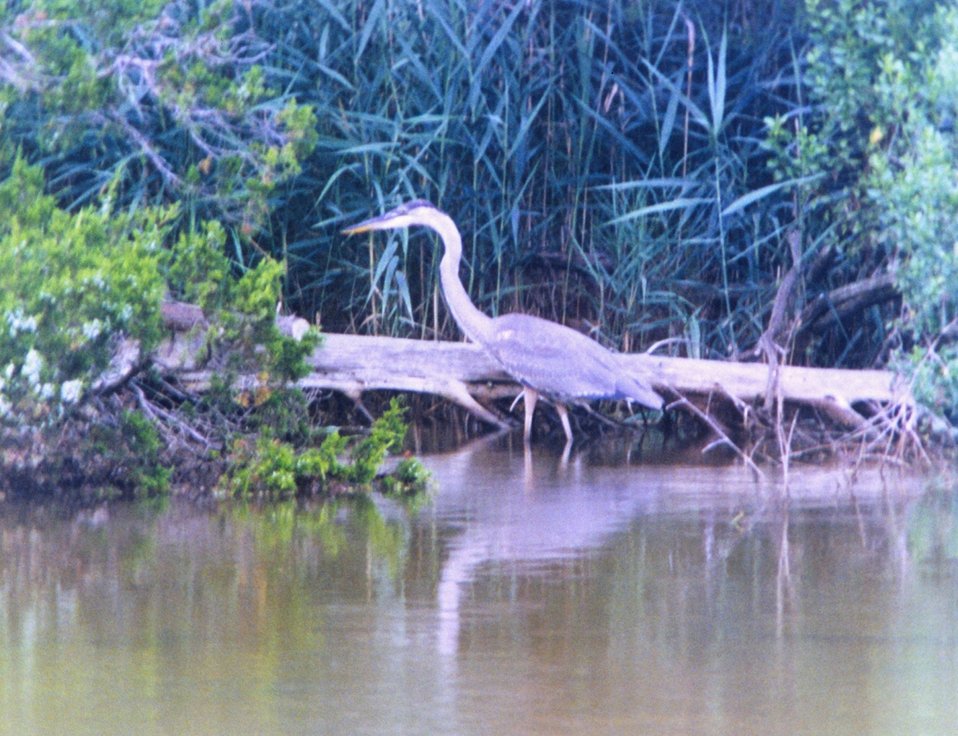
A Great Blue Heron on the banks of the Patuxent River.